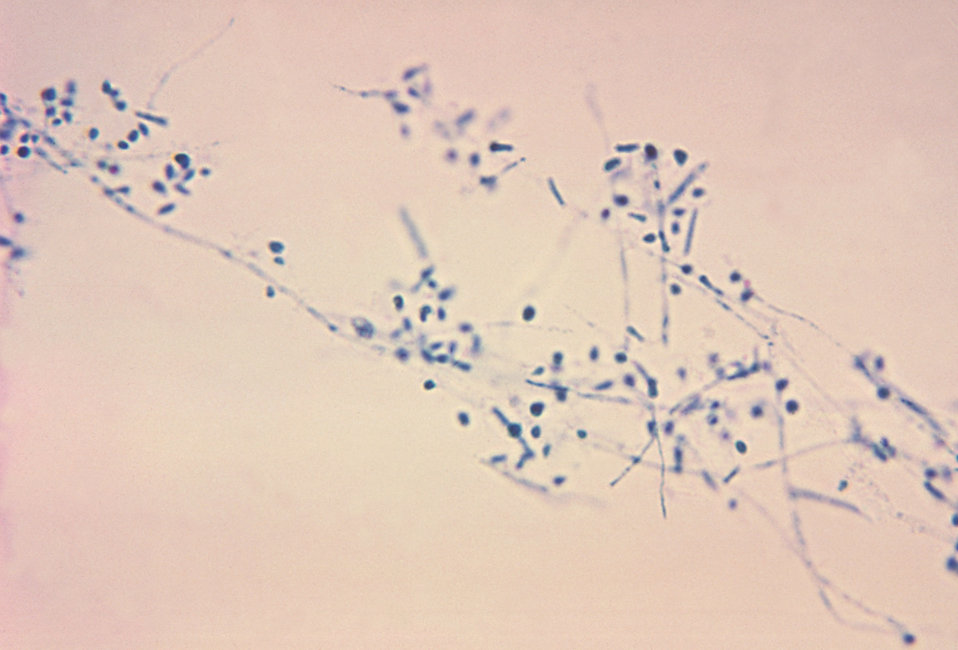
This is a photomicrograph of the fungus Microsporum gypseum using the lactophenol cotton blue staining technique.